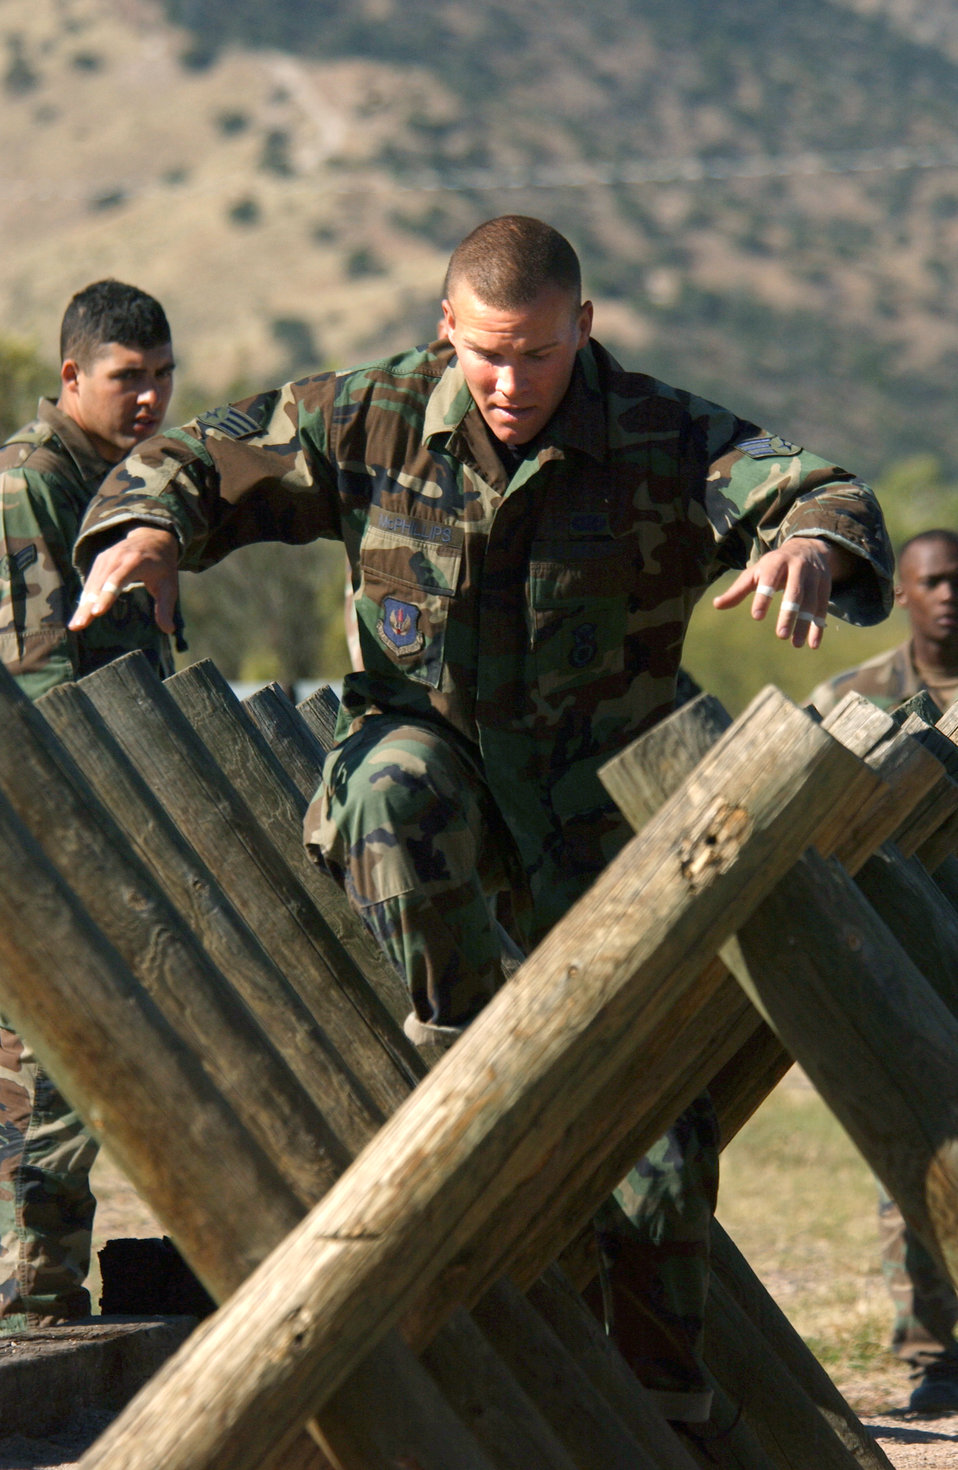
Defender Challenge 2004

FORT HUACHUCA, Ariz. -- Senior Airman Dustin McPhillips climbs over beams on a training obstacle Oct. 14. Members of the U.S. Air Forces in Europe Defender Challenge team are spending three weeks here in preparation for the 2004 Defender Challenge competition. Defender Challenge held at Lackland Air Force Base, Texas, is a security forces competition pitting competitors from major commands against one another over a series of events. Airman McPhillips is assigned to the 568th Security Forces Squadron, Ramstein Air Base, Germany.